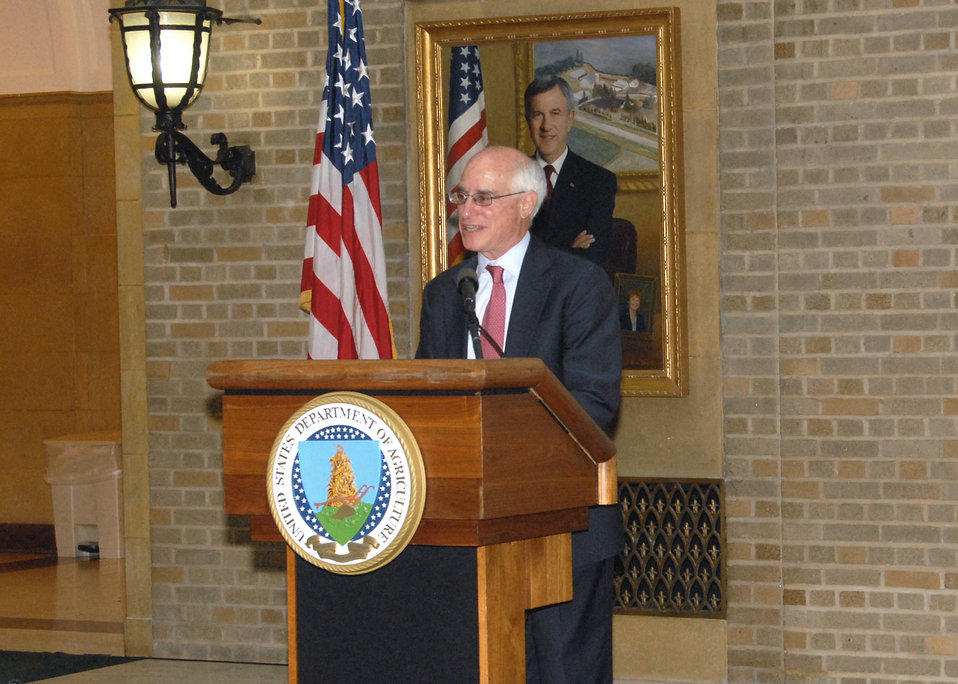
Agriculture Under Secretary for Natural Resources and Environment (NRE) Harris Sherman speaks at the U.S. Department of Agriculture’s (USDA) opening ceremony for the 2012 Combined Federal Campaign on Tuesday, Sept. 18, 2012 at the USDA Whitten Building, in Washington, D.C. USDA has set a goal of raising just under $2 million from their employees in the national capital area. The theme for this year’s CFC campaign is 'Choose Hope'.